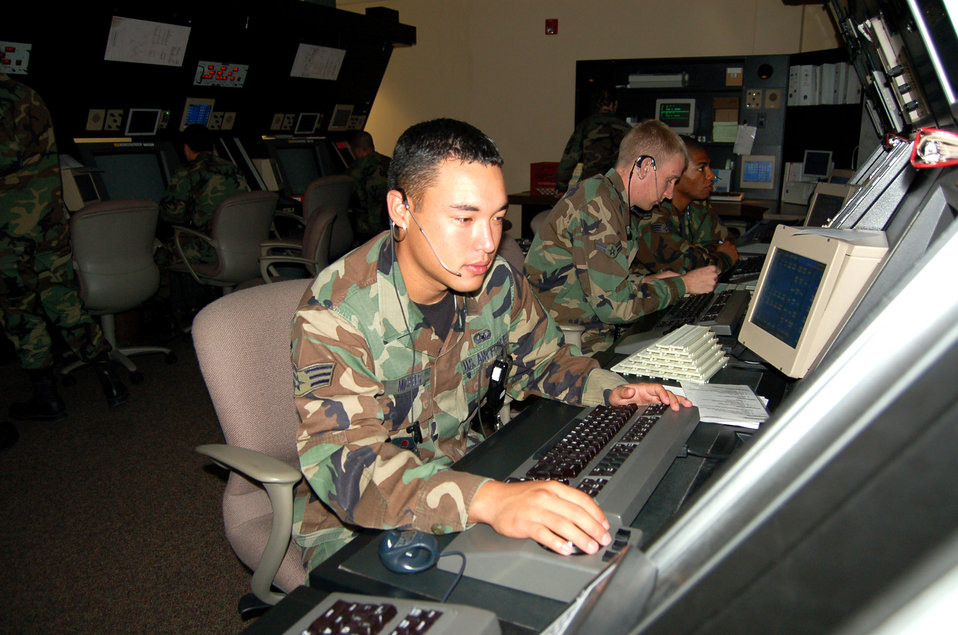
Laughlin students keep air traffic controllers busy

Senior Airman Anthony Michels monitors flights at the radar approach control facility at Laughlin Air Force Base, Texas, on June 26, 2006. Airman Michaels, from Rosemont Minn., is an air traffic controller with the 47th Operations Support Squadron.